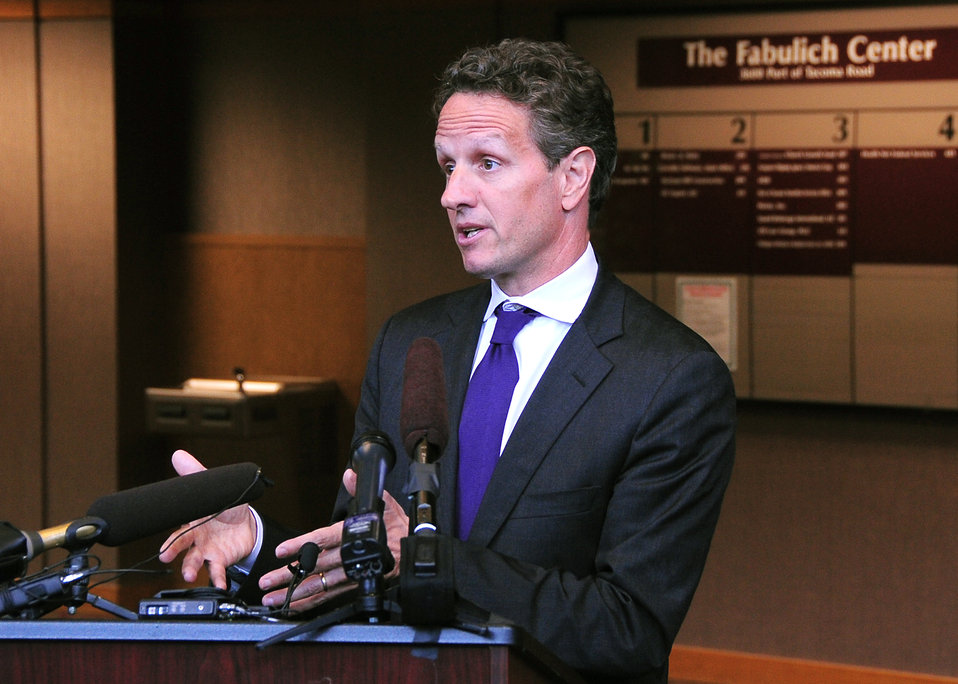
Tacoma, 5/18/2010

Secretary Geithner at a press conference at the Port of Tacoma with Governor Gregoire to discuss the importance of U.S. exports.